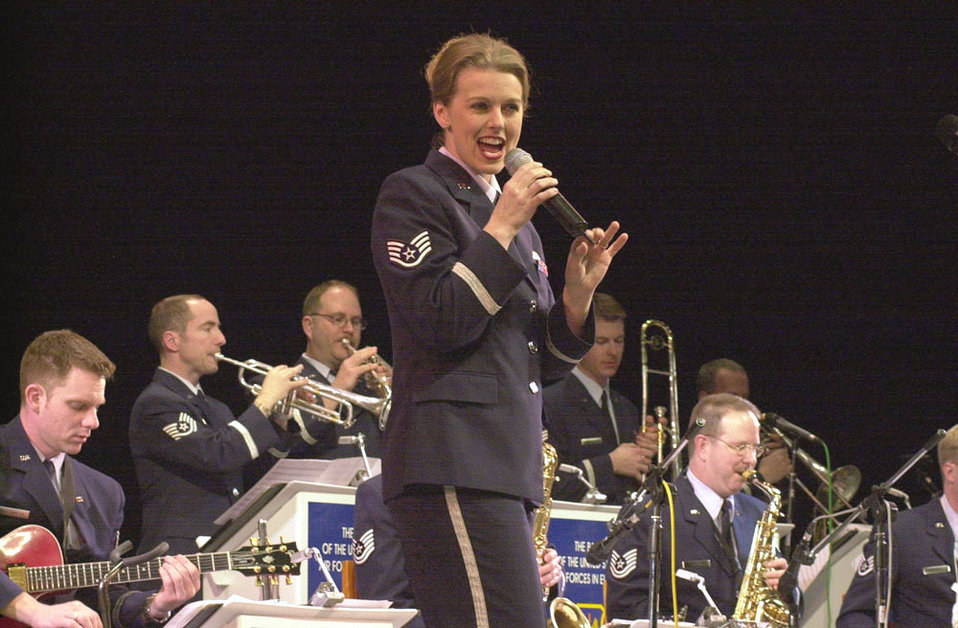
And the band plays

YEKATERINBURG, Russia -- Staff Sgt. Krista Joyce sings with a U.S. Air Forces in Europe band during the 10-year anniversary celebration of the U.S. Consulate General here March 31.